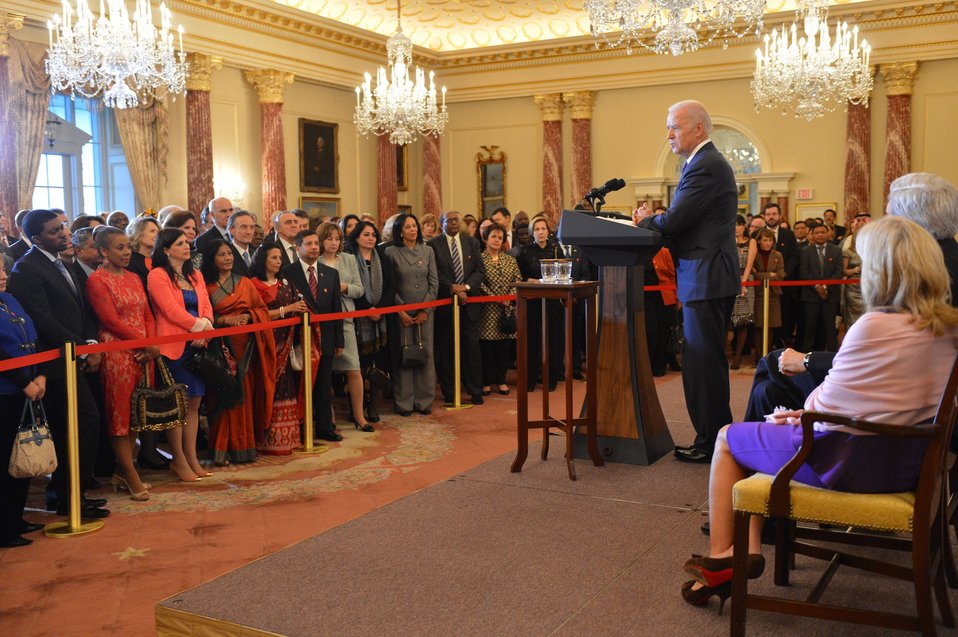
Vice President Biden Delivers Remarks at the Holiday Reception for the Diplomatic Corps and Their Spouses

With U.S. Secretary of State John Kerry and Second Lady of the U.S., Dr. Jill Biden, Vice President Joseph Biden delivers remarks at the Holiday Reception for the Diplomatic Corps and their spouses at the U.S. Department of State in Washington, D.C., on December 9, 2013.